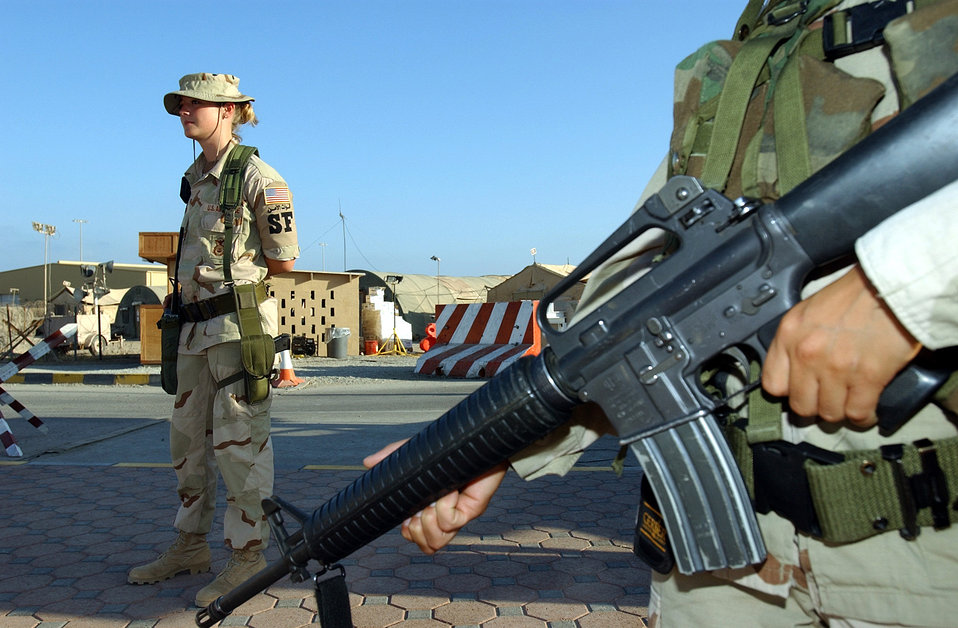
Officials unveil 2004 budget proposals

OPERATION ENDURING FREEDOM -- Airmen assigned to the 321st Expeditionary Security Forces Squadron provide command and control of an entry-control point at a forward-deployed location supporting Operation Enduring Freedom. The president's fiscal 2004 budget proposal authorizes $380 billion for the Department of Defense to win the global war on terrorism and continue the military transformation.